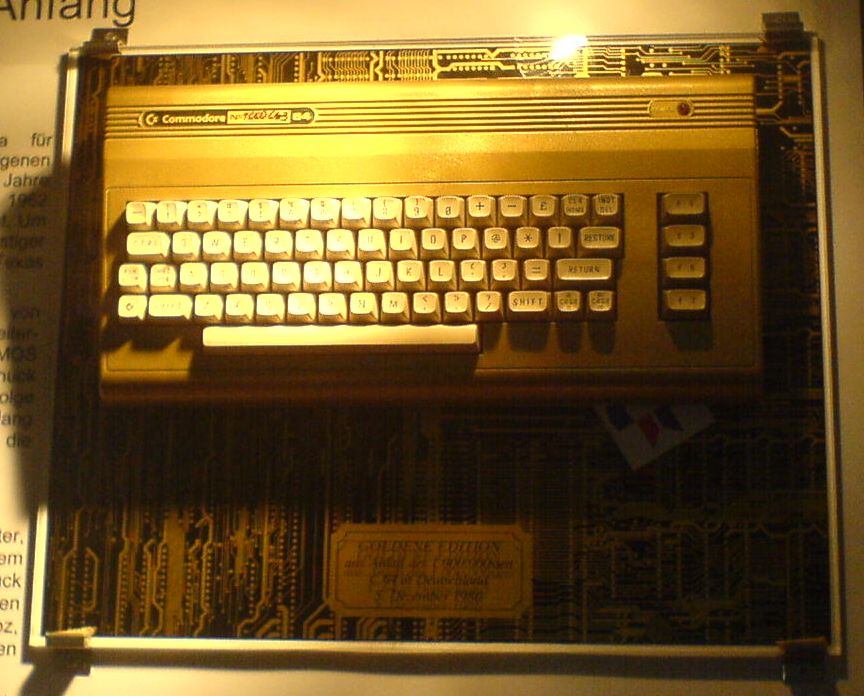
Deutsch: C64 Gold Edition, fotografiert von Swgreed auf der Systems 2006, München C64 Gold Edition, photographed by Swgreed at the Systems 2006, Munich, Germany